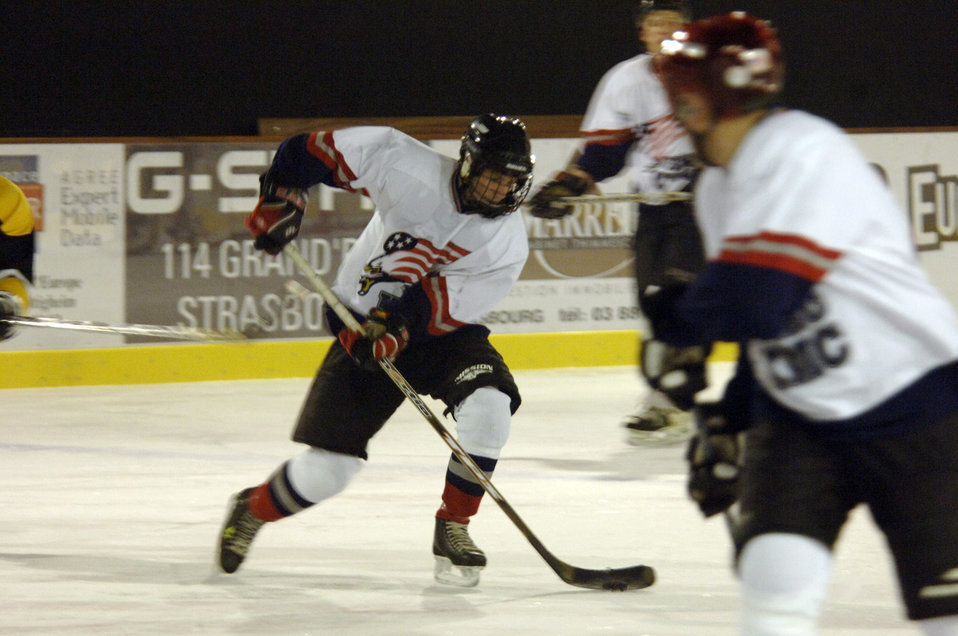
German-based Airmen put French on ice

STRASBURG, France (AFPN) -- Staff Sgt. Dustin Johnson controls the puck during a hockey game in eastern France. The Ramstein Rams hockey team held on to win 6-5 against the Strasburg Gryphons despite a late game push. Sergeant Johnson is part of the Kaiserslautern Military Community, which has a hockey team made up of 30 players in different skill levels varying from semi-pro to beginners. Sergeant Johnson is with the 1st Combat Communication Squadron at Ramstein Air Base, Germany.